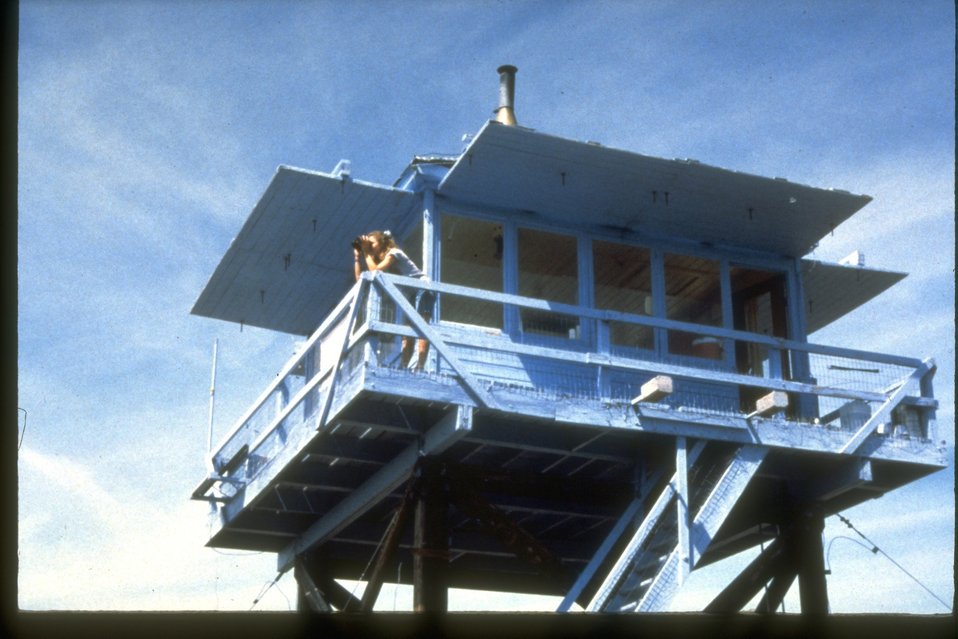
Lookout tower and observer.